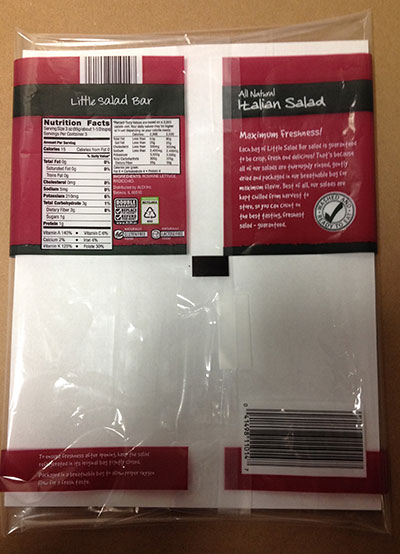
RECALLED – Variety of Bagged salads

March 13, 2014 – Product Recall – Dole Fresh Vegetables Voluntarily Recalls Limited Number of Bagged Salads Due to Possible Health Risk.